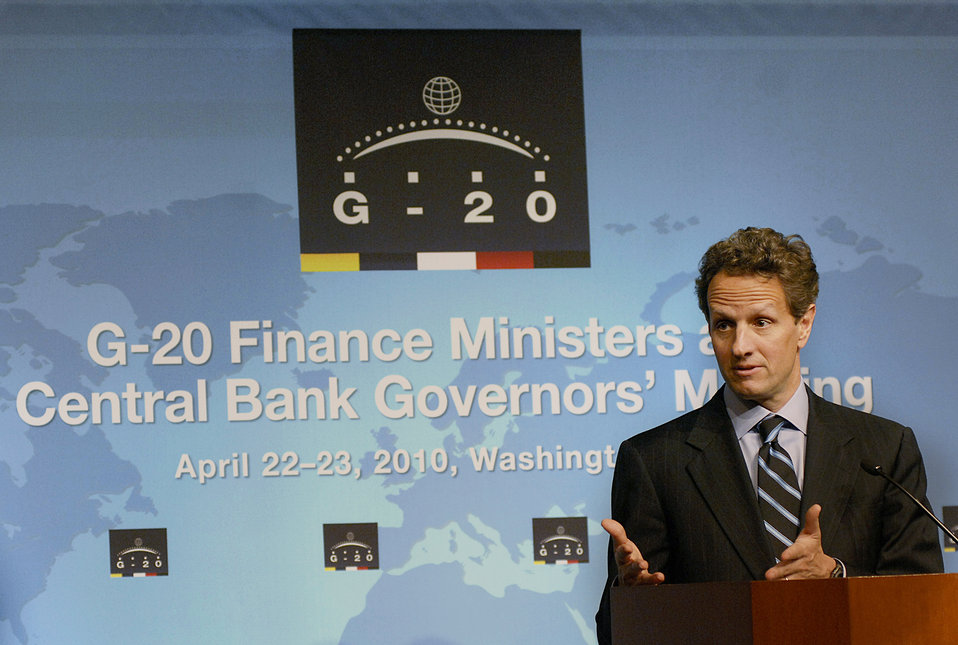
G-20 Press Conference, 4/23/10

On April 23, 2010, Secretary Geithner held a press conference at the conclusion of the G-20 Meeting of Finance Ministers at the IMF.